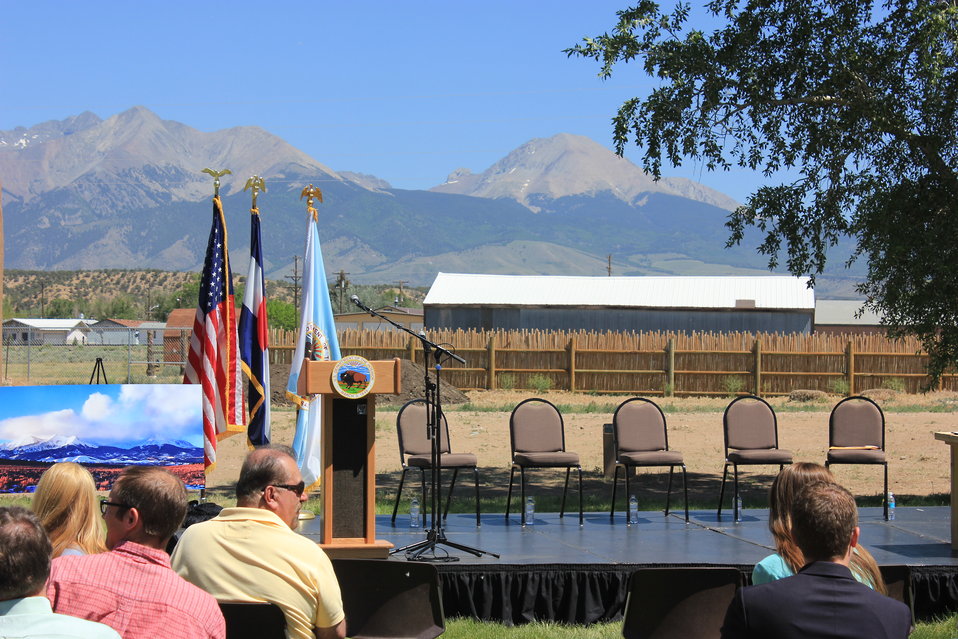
Historic Conservation Easement in Sangre de Cristo Mountains